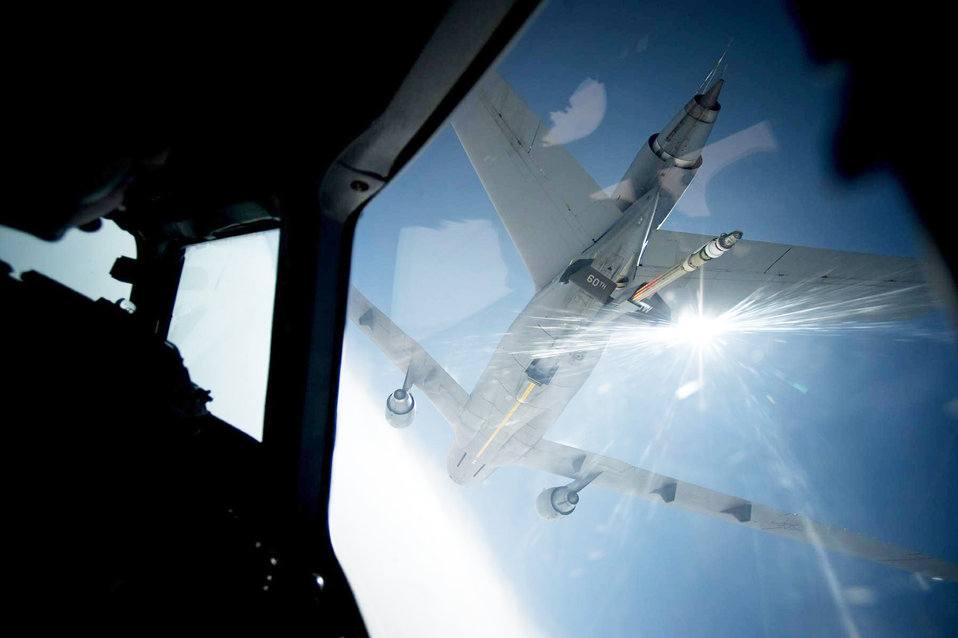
Hydra Exercise 2009

A KC-10 Extender aircraft from the 60th Air Mobility Wing, refuels a C-17 Globemaster during the Hydra Exercise 2009. Hydra is a training exercise developed to provide a West Coast venue to train the 615 Contingency Response Wing's unique mission capabilities such as, command and control, aerial port, maintenance and air mobility liaison duties in a joint environment.